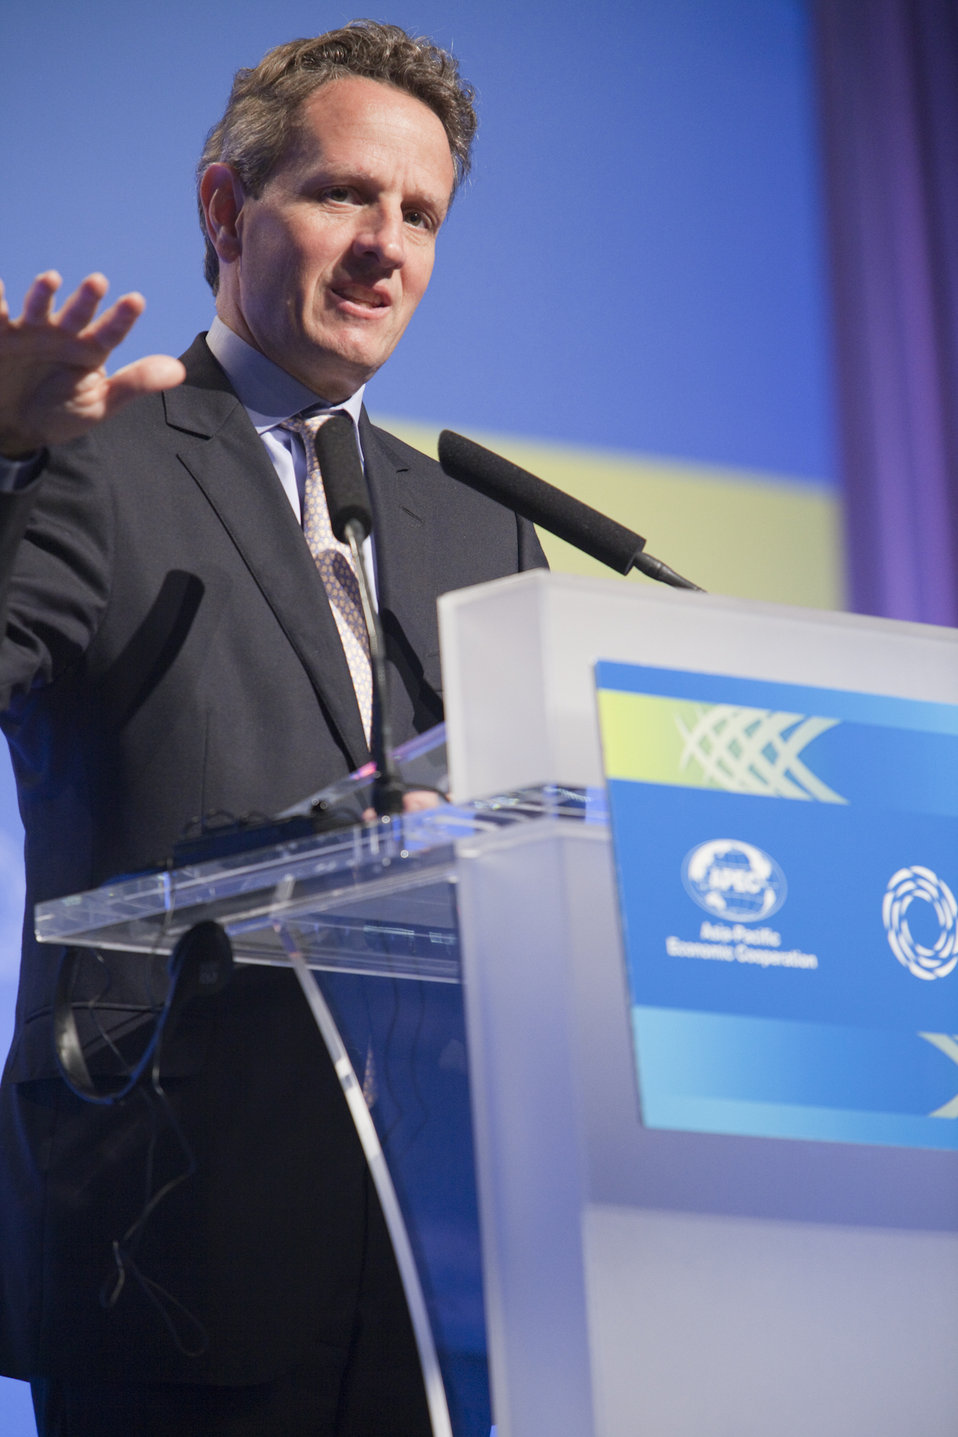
APEC Meeting of Finance Ministers

'The meetings over the past two days have reinforced the importance of the relationships shared by APEC members,' said Treasury Secretary Tim Geithner at a press conference at the conclusion of the meetings. 'This weekend, President Obama will host the APEC Economic Leaders, and they will work to further strengthen those relationships, and in turn, strengthen growth in the Pacific Rim and around the world.'